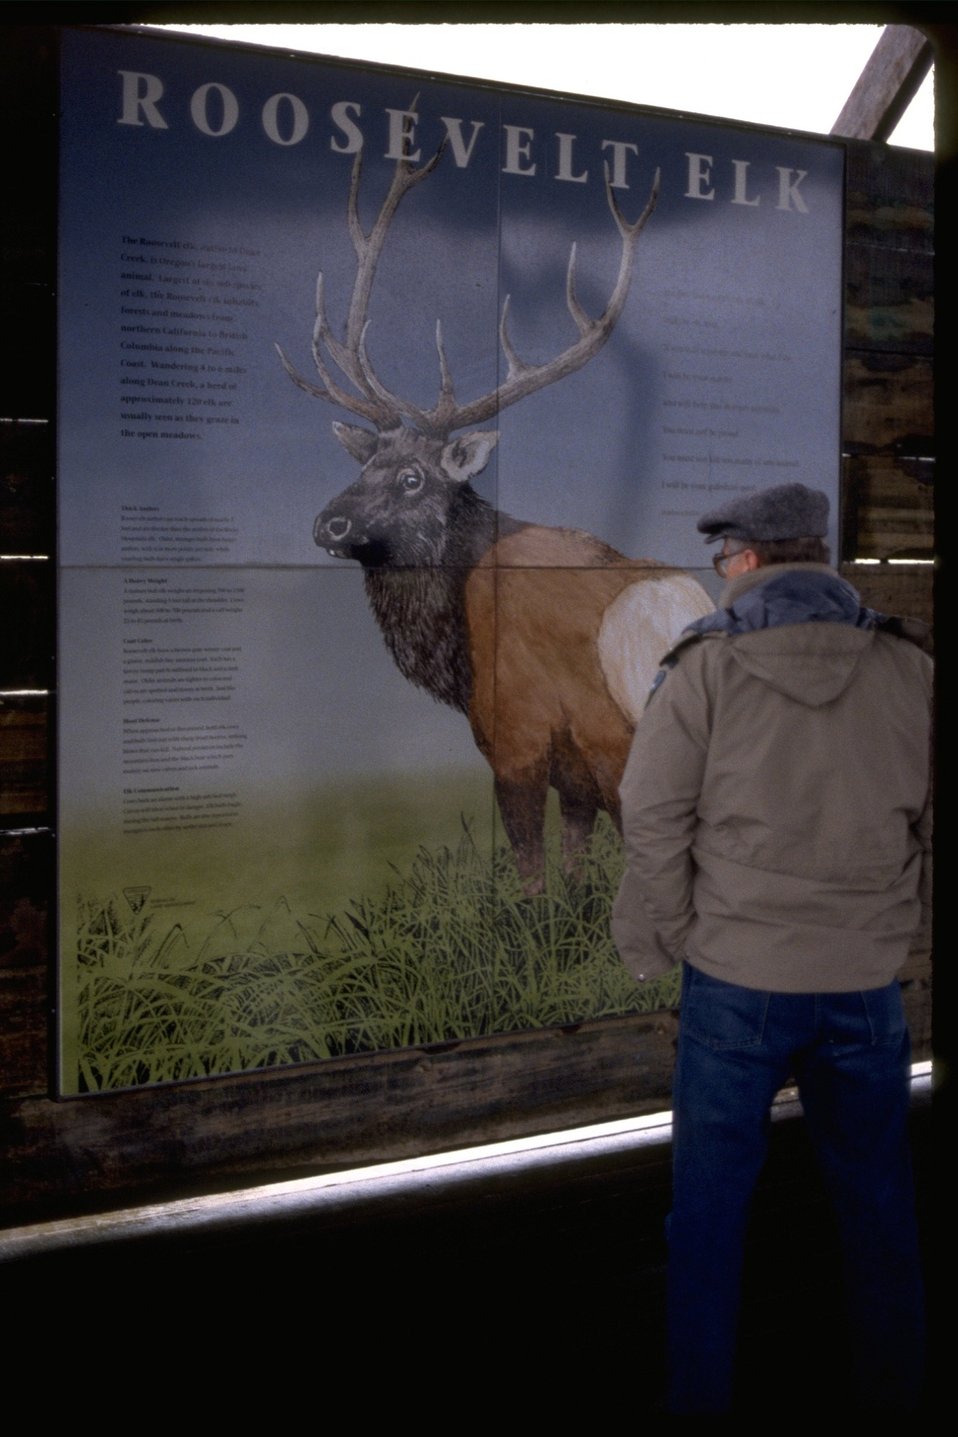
Dean Creek Interpretive sign, reading "Roosevelt Elk.